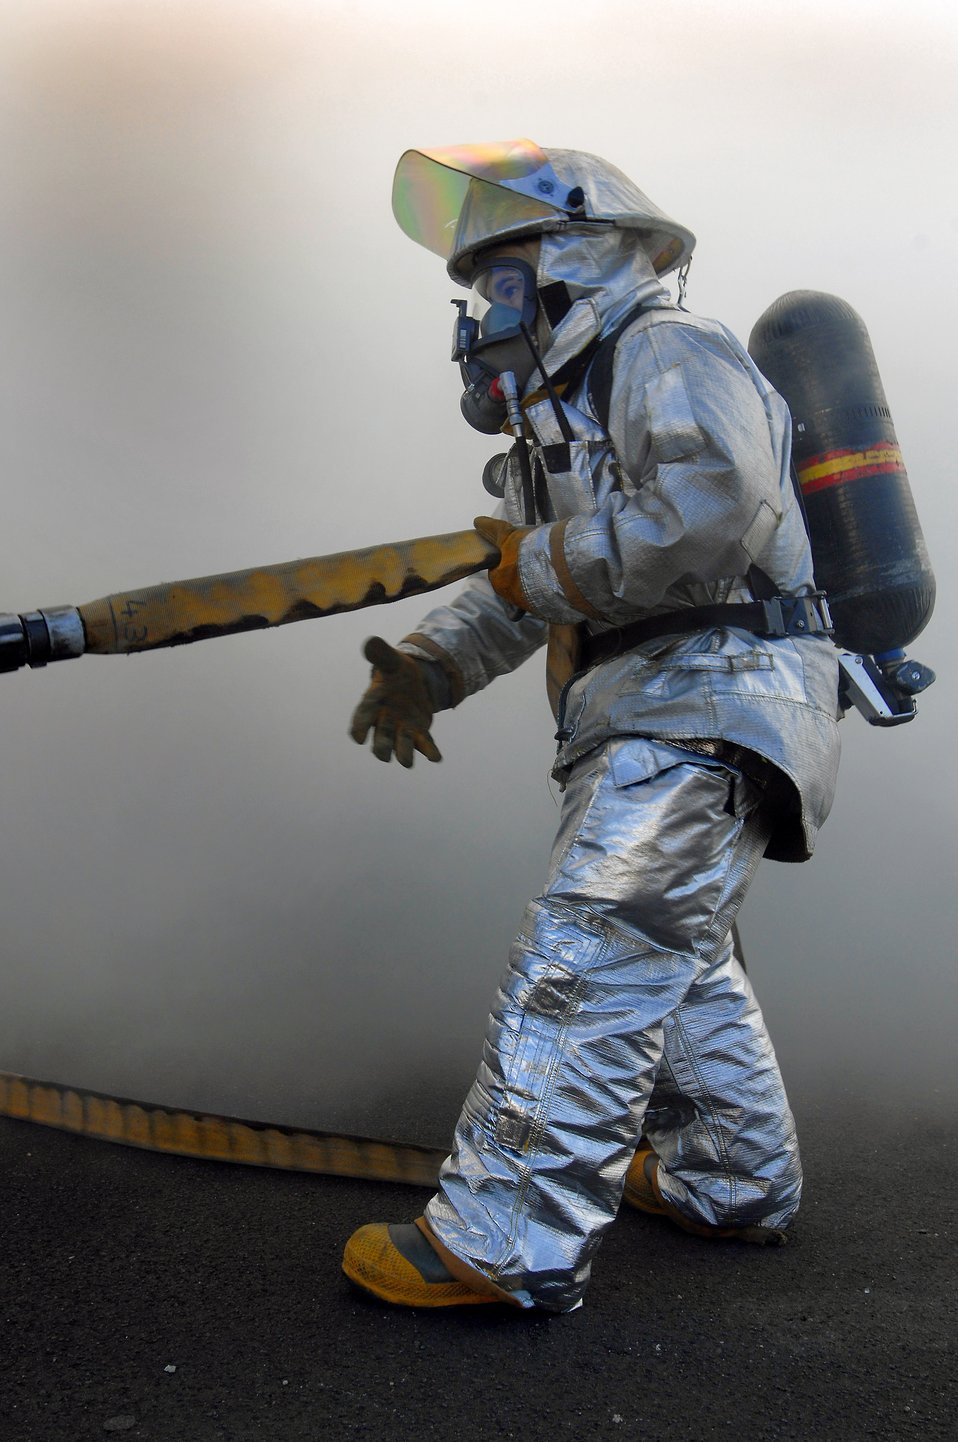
Ramstein firefighters train in mass casualty exercise

A firefighter participates in a mass casualty exercise Feb. 11 at Ramstein Air Base, Germany. The scenario involved 23 firefighters working to save victims trapped in a burning building.